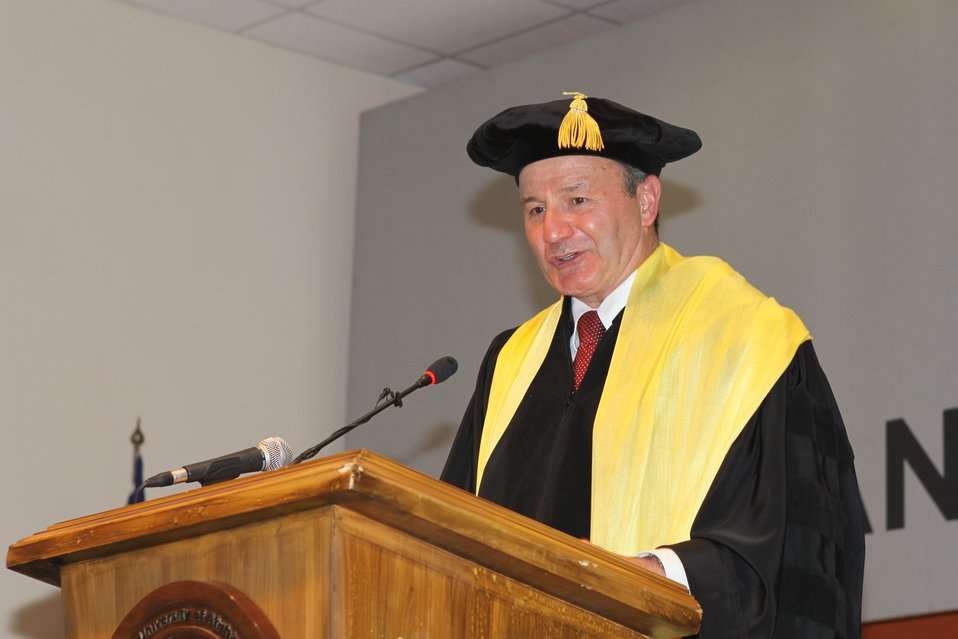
100526 AUAF Graduation 203